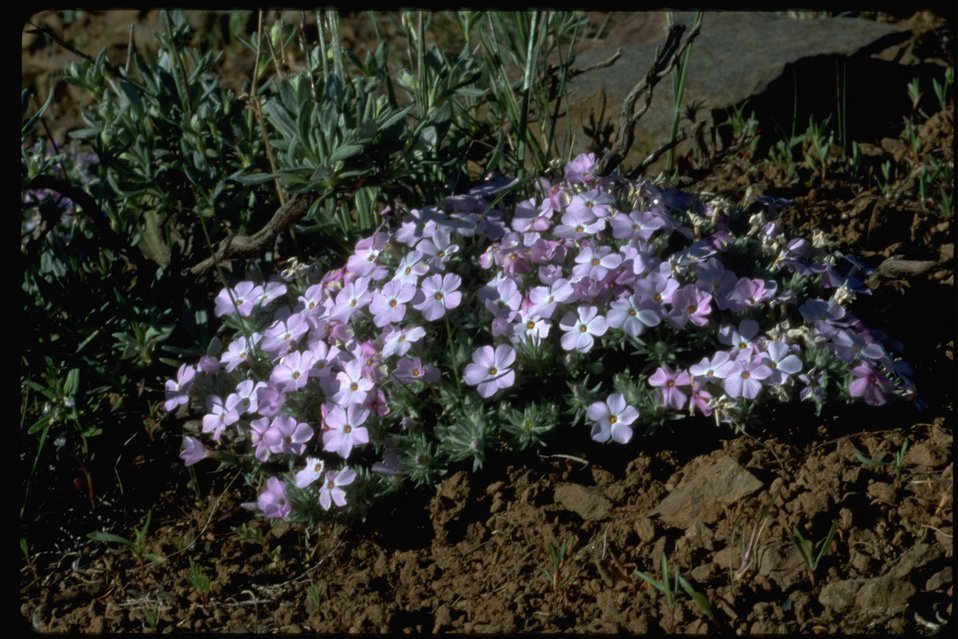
Medium shot of Phlox wildflowers.